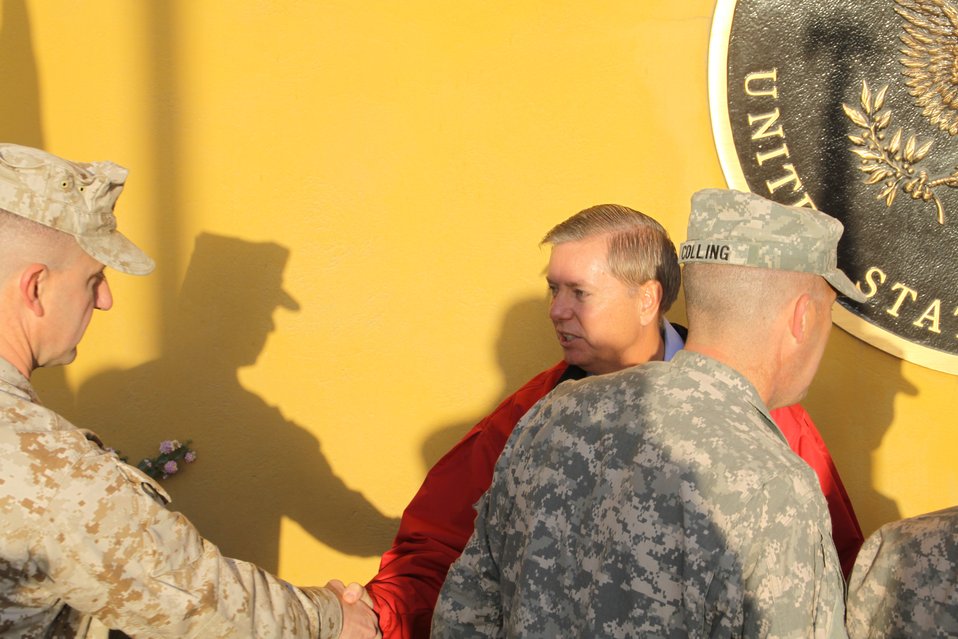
Senator Graham